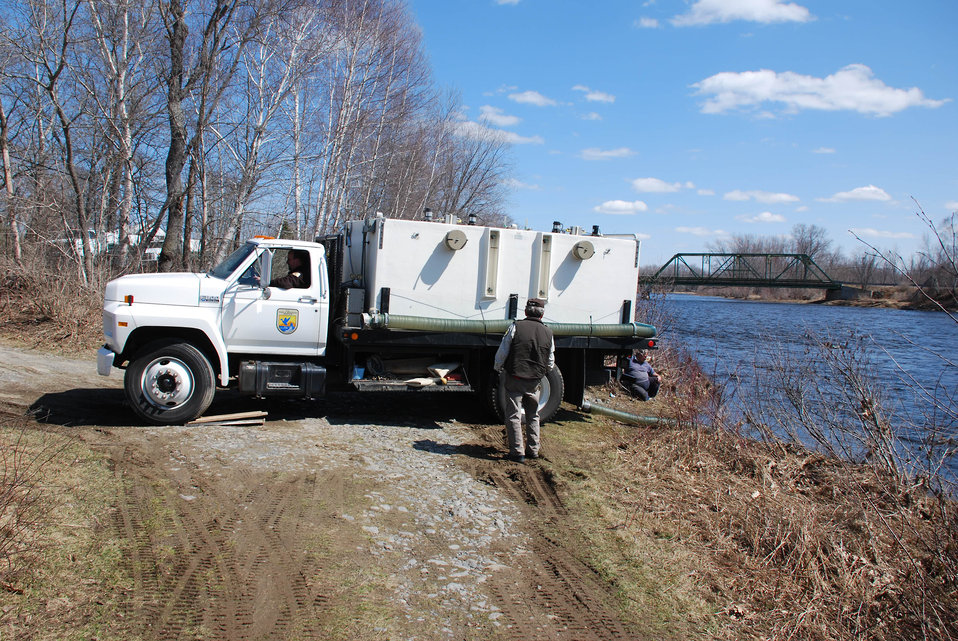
Release Site, Pleasant River

Green Lake National Fish Hatchery employee Leon Behler monitors as other employee Keith Boyer eases the distribution truck up to the shoreline for the release.